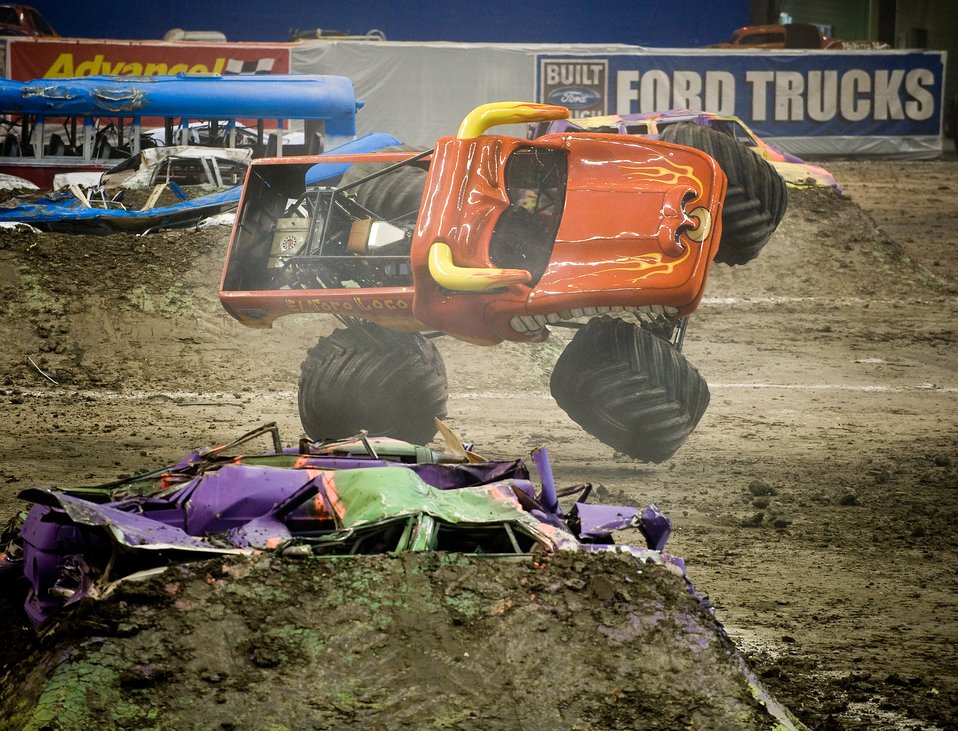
AF flies high at Monster Jam

Lupe Soza, driving El Toro Loco, gave the best freestyle performance with a perfect score to win the event at the 2009 Monster Jam at the Alamodome in San Antonio on Jan 11. Mr. Soza drove his truck to the limit with multiple two-wheeled saves as he jumped off, bounced on and drove over the obstacles made of dirt mounds, busses and crushed cars. Approximately 45,000 people attend the event. These monster trucks have big block supercharged racing V-8 engines that churn out more than 1,400 horsepower. They weigh approximately 10,000 lbs and are equipped with four-wheel steering. The wheels and tires are 66